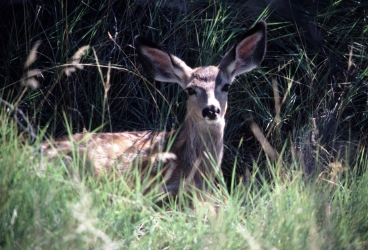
Mule deer are much more abundant than white-tailed deer on CMR National Wildlife refuge.